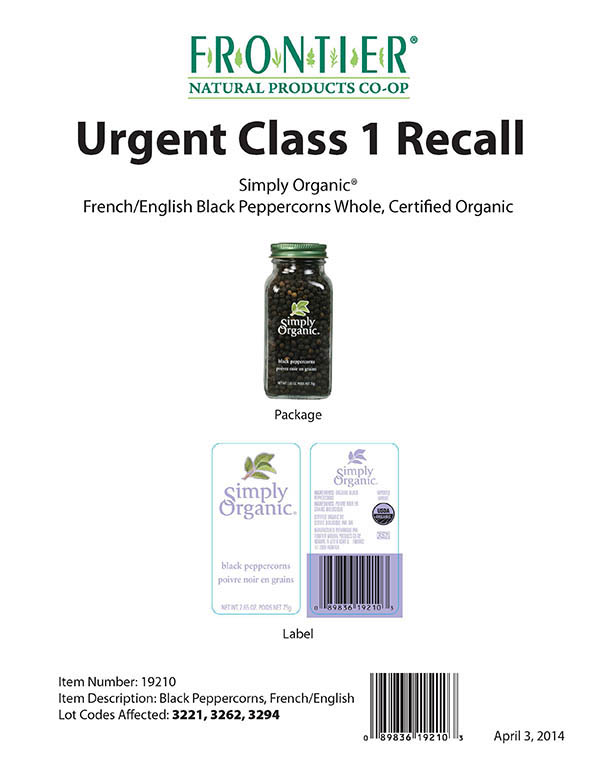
RECALLED – Organic Black Peppercorns

April 4, 2014 – Product Recall – Frontier Natural Products Co-op Initiates Voluntary Class 1 Recall Due to Possible Health Risk from Organic Black Peppercorns.